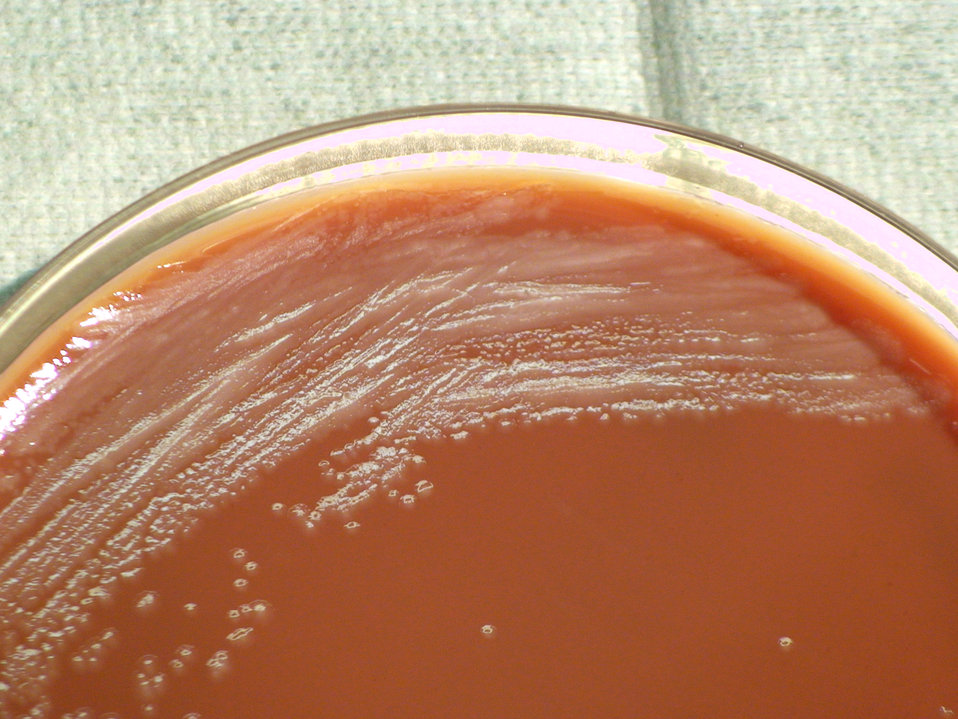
A closer view of PHIL 12425, this photograph depicts the colonial morphology displayed by Gram-negative Burkholderia thailandensis bacteria, which was grown on a medium of chocolate agar, for a 24 hour time period, at a temperature of 42�C. See both PHIL 12403 and 12404 for a view of this bacterial specie, grown on the same medium, but at a lesser temperature (37�C), and for a greater amount of time (48hrs). Take a look at PHIL 12417 and 12418, which depict the B. thailandensis colonial growth, again on the same medium, and for the same cultivation time (24hrs), but again, at a lesser temperature (37�C).